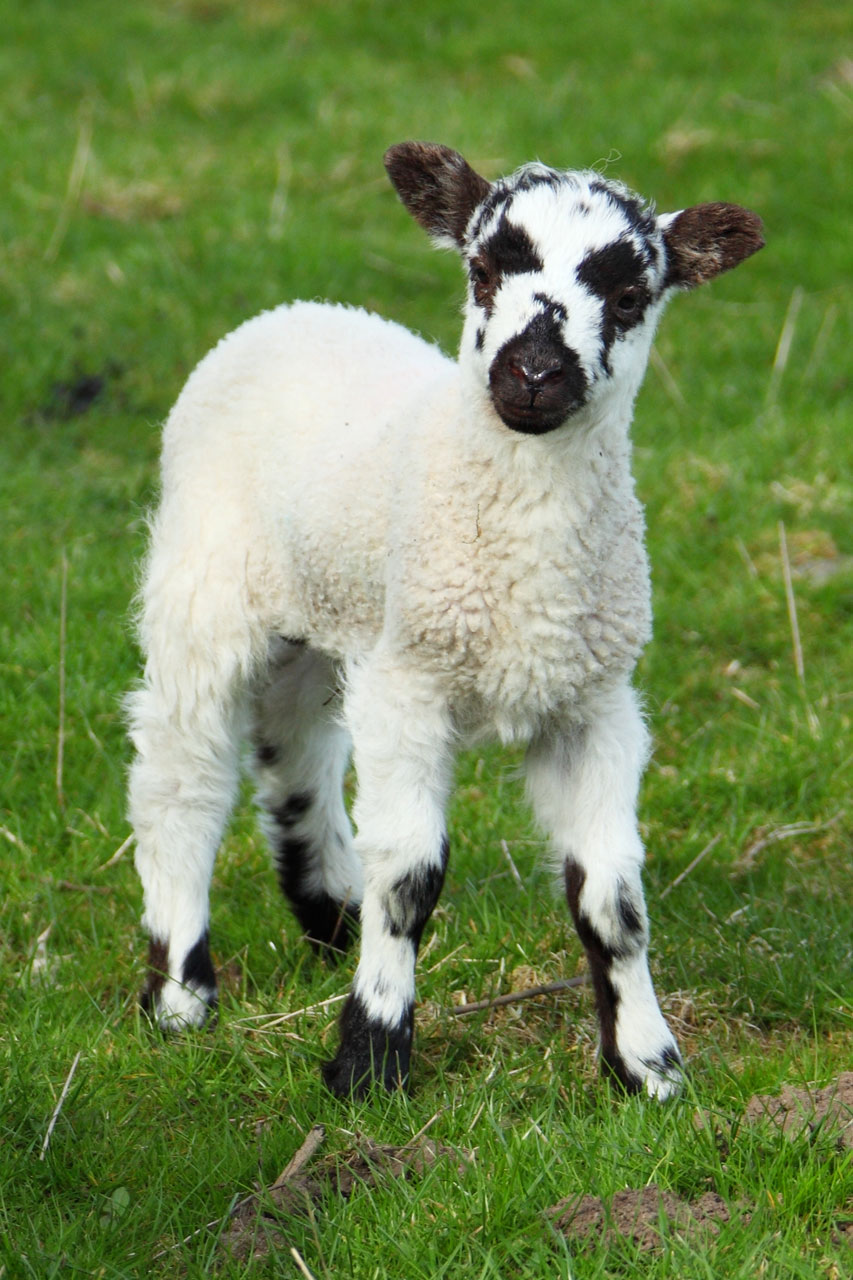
Baby sheep

Young baby sheep.